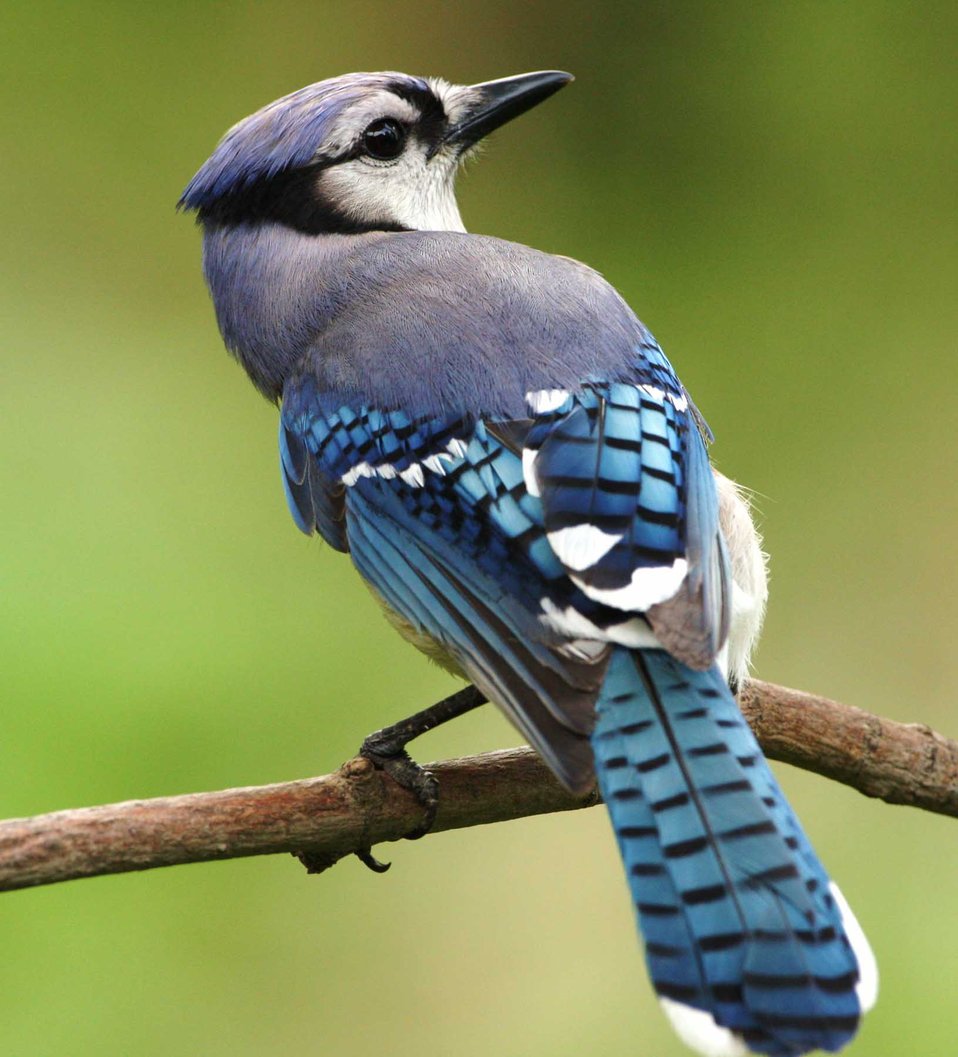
Blue Jay at John Heinz National Wildlife Refuge in Philadelphia, Pennsylvania.